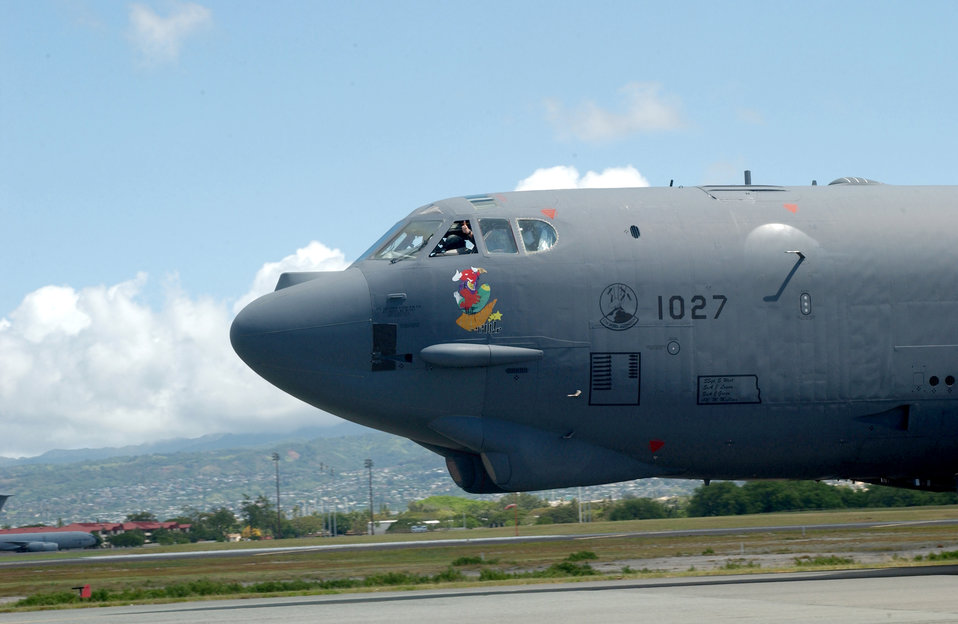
Sun bathing

HICKAM AIR FORCE BASE, Hawaii -- A B-52 Stratofortress sits on the runway April 6. Four B-52s arrived here from Andersen Air Force Base, Guam, to escape Typhoon Sudal which missed the island April 7. The B-52s are deployed to Andersen from Minot AFB, N.D.